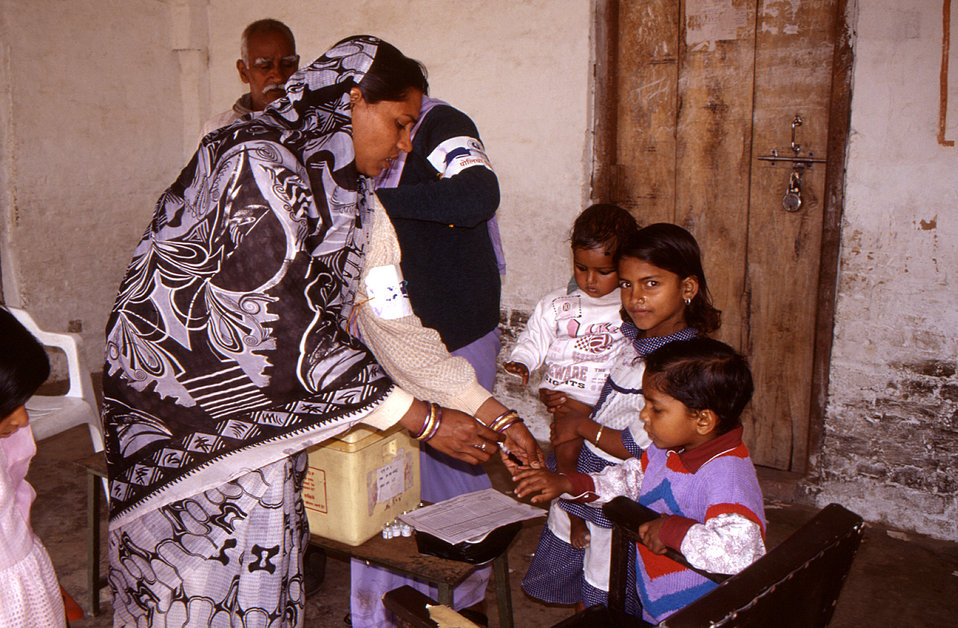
This 2000 image depicted a health care worker marking a child who'd just received a polio vaccination. Following the receipt of polio immunization, the finger of the recipient was stained with ink. This serves as documentation that the child actually received the immunization, and also prevented the child from receiving an additional dose during that immunization campaign. The image was provided by Chris Zahniser, B.S.N., R.N., M.P.H., a STOP Transmission of Polio (STOP) immunization initiative team member and photographer. Ms. Zahniser was at the time assigned to the state of Uttar Pradesh in northern India, and spent three months working in the Districts of Gorakhpur and Deoria.